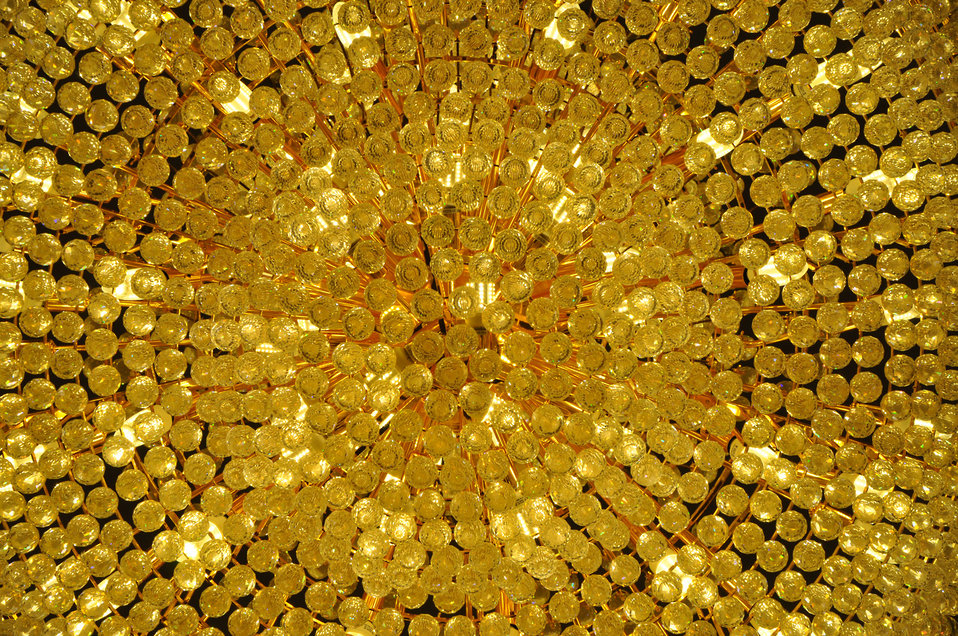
Texture of lights

Lamps in hotel.